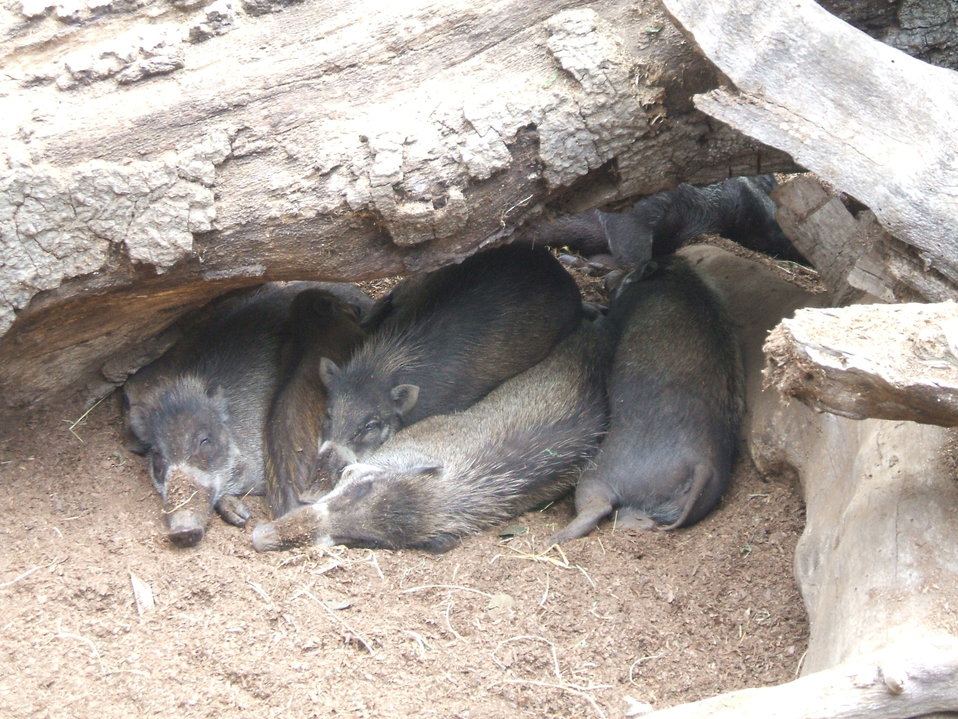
Aww... piggies.